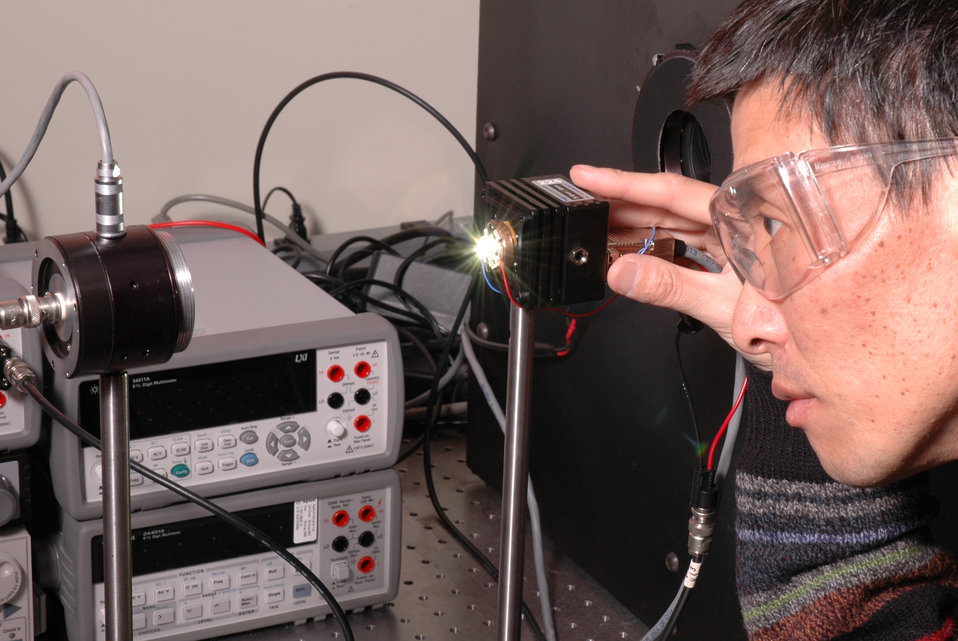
LED Standands

NIST scientists Yuqin Zong (pictured) and Yoshi Ohno have developed a new method for measuring the optical properties of high power LEDs that will allow manufacturers to accurately obtain and compare data. By mounting the LED on a temperature controlled heat sink, the researchers can test the LEDs at their normal operating temperature (important to commercial manufacturers) at high speed (important to LED manufacturers).